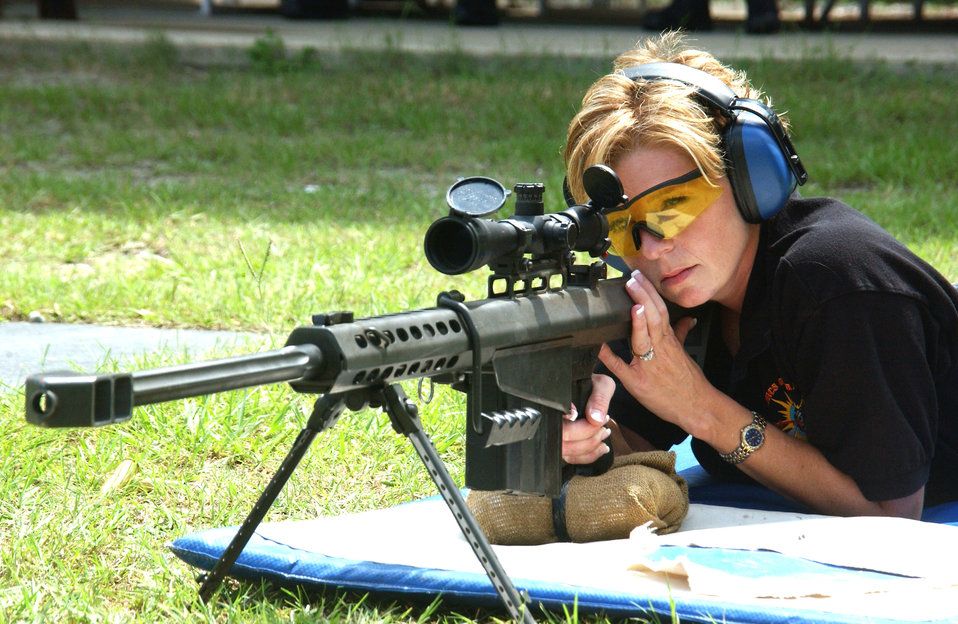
Dynamics of terrorism

Master Sgt. Tanya Breed sights in a Barrett .50 caliber sniper rifle during training at Hurlburt Field, Fla., Sept. 13. Sergeant Breed demonstrated sniper capabilities for students at the U.S. Air Force Special Operations School's Dynamics of International Terrorism course, which offers students a basic awareness of the motivation, capabilities and threat posed by terrorist groups. Sergeant Breed is superintendent of operations at the school.